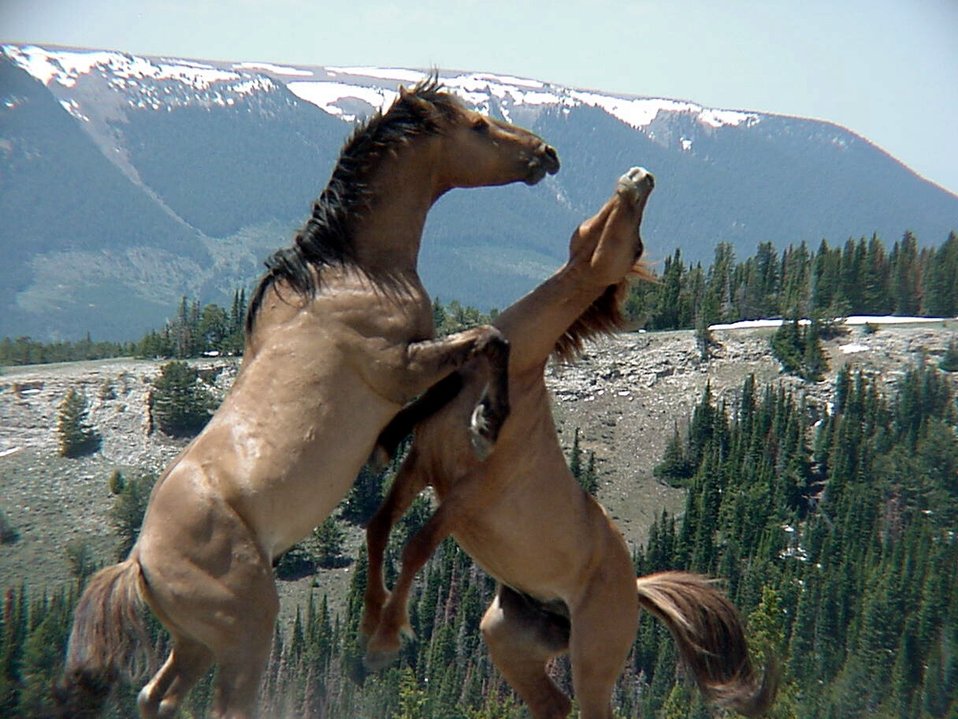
Wild horses fighting on the Pryor Mountain National Wild Horse Range